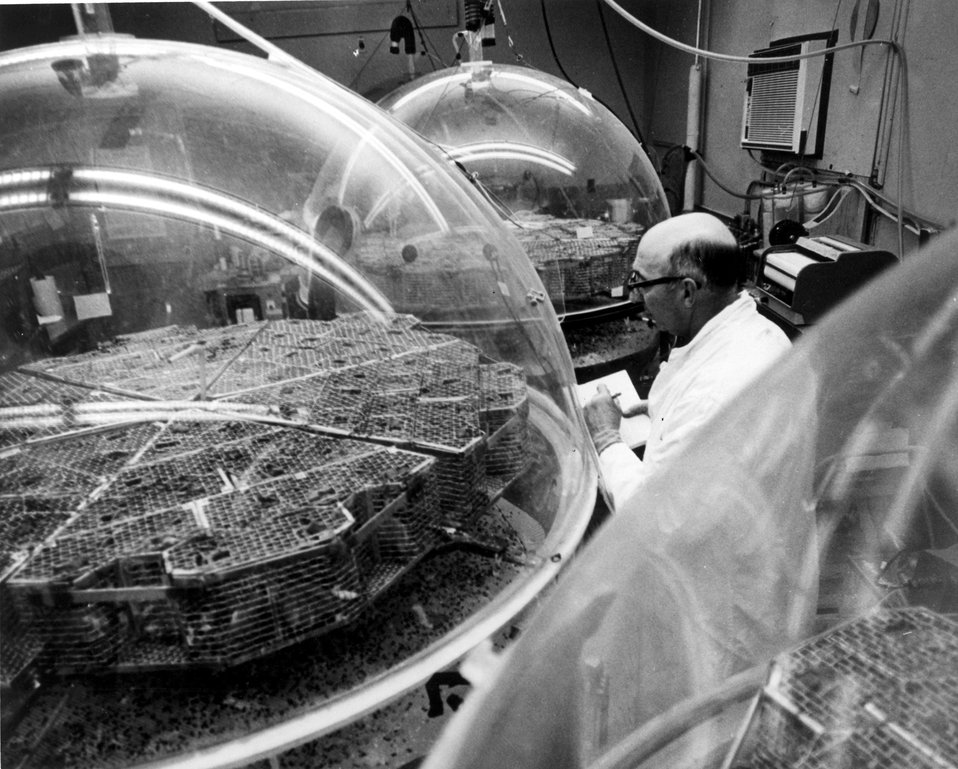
At the U.S. Atomic Energy Commission's Oak Ridge National Laboratory in Richland, Washington, individually caged hamsters in 'bubble' chambers are subjected to simulated uranium mine atmospheres in an investigation related to the incidence of lung cancer in uranium miners. c. 1973